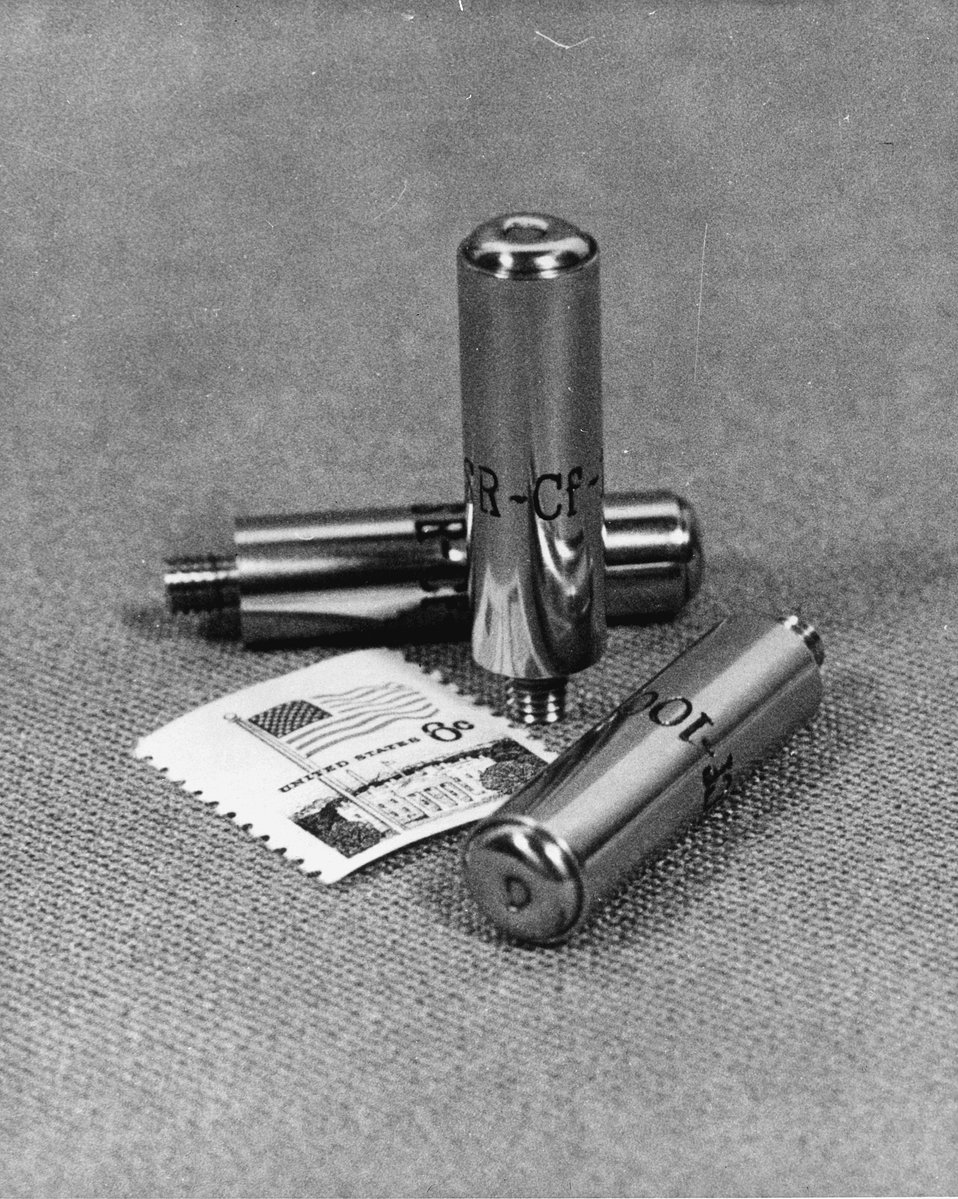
The world's most compact and intense isotope neutron sources are provided by californium-252. c. 1972